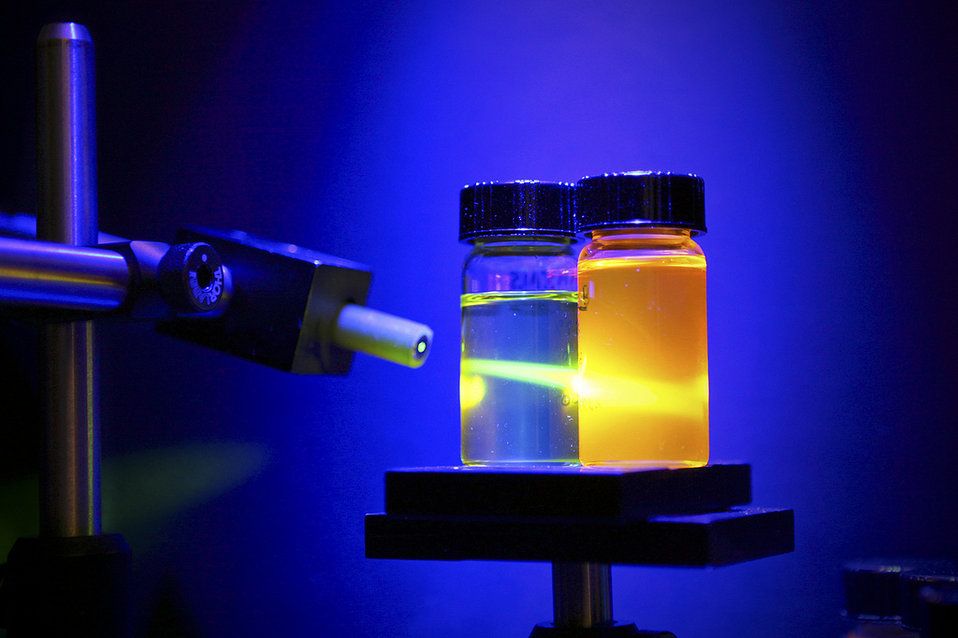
THIS IMAGE SHOWS FLUORESCENCE OF DIESEL FUEL WITH AND WITHOUT THE DYE USED FOR FUEL-IN-OIL (FIO) TECHNOLOGY DEVELOPED BY ORNL'S FUELS ENGINES AND EMISSIONS RESEARCH CENTER.

Advanced diesel engines have integral catalyst systems which require extra fuel to be injected into the engine cylinders periodically. If this process is not fully optimized, these extra fuel injections can result in the engine oil being contaminated by fuel, which can lead to reduced efficiency and long-term durability issues. ORNL's FiO technology provides for real-time, rapid-feedback, on-engine assessment of this type of oil contamination. The technology enables improved engine calibration and, in turn, improved efficiency and durability.